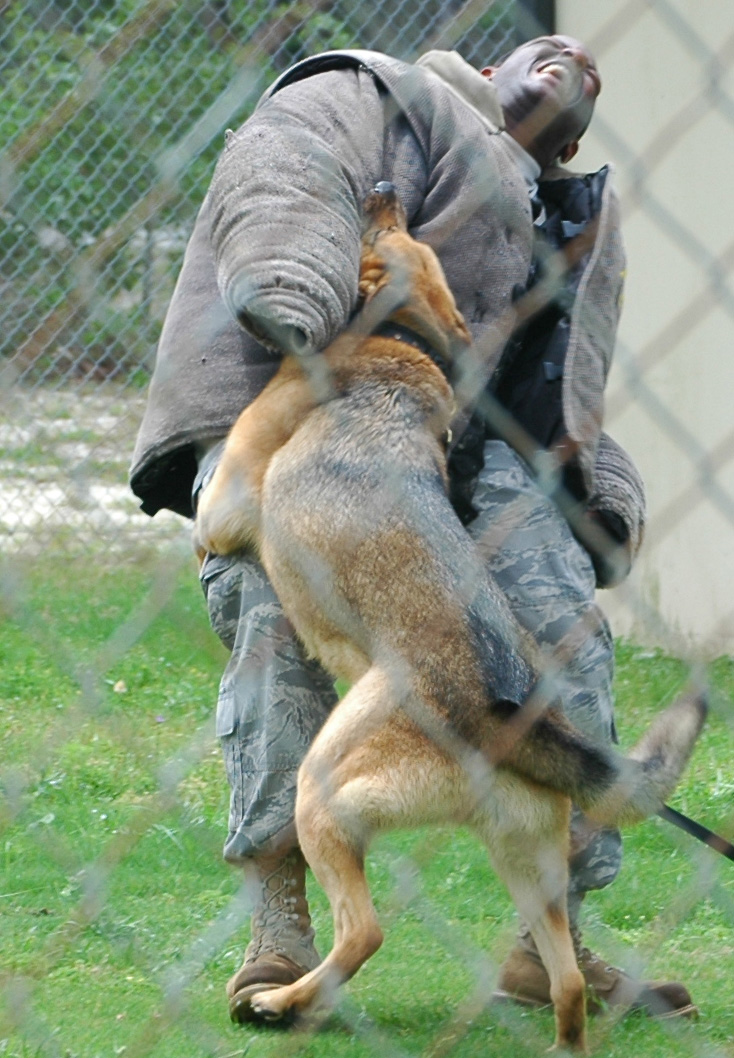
Airmen help Florida youth see inner potential

Staff Sgt. Johnathon Winters is attacked by Ciro during a demonstration of the military working dog's prowess May 5 at Tyndall Air Force Base, Fla. The demonstration served as a reward for good behavior for 10 youths involved with the Liberty Juvenile Unit for Specialized Treatment program from Bristol, Fla. Sergeant Winters is a 325th Security Forces Squadron military working dog trainer.